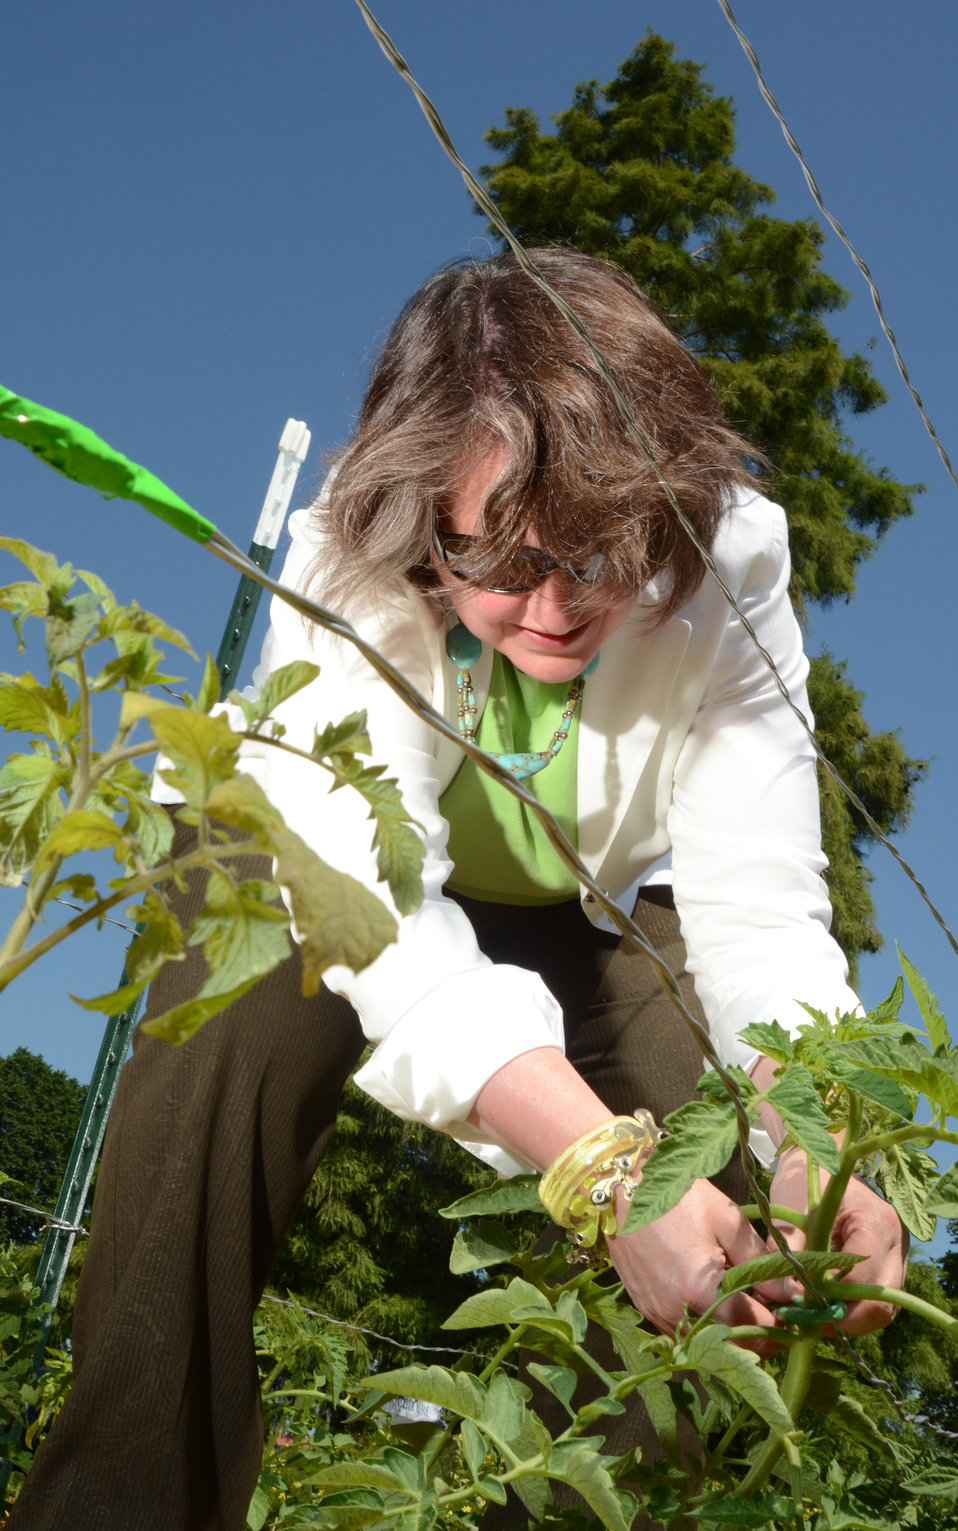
Agriculture Deputy Secretary Kathleen Merrigan stakes tomatoes in the Peoples Garden before the USDA kickoff event for Feds Feed Families at the U.S. Department of Agriculture Farmers Market in Washington, D.C., on Friday, June 8, 2012.